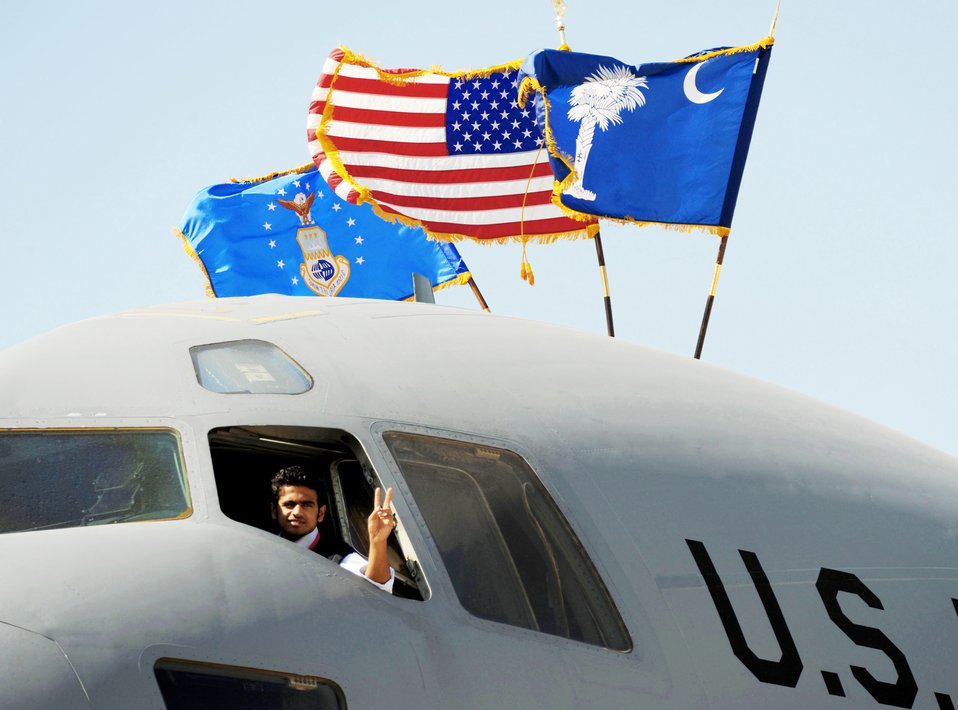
Airmen, Sailors demonstrate airpower at Bahrain International Airshow

A local Bahraini boy looks out of an Air Force C-17 Globemaster III while holding a